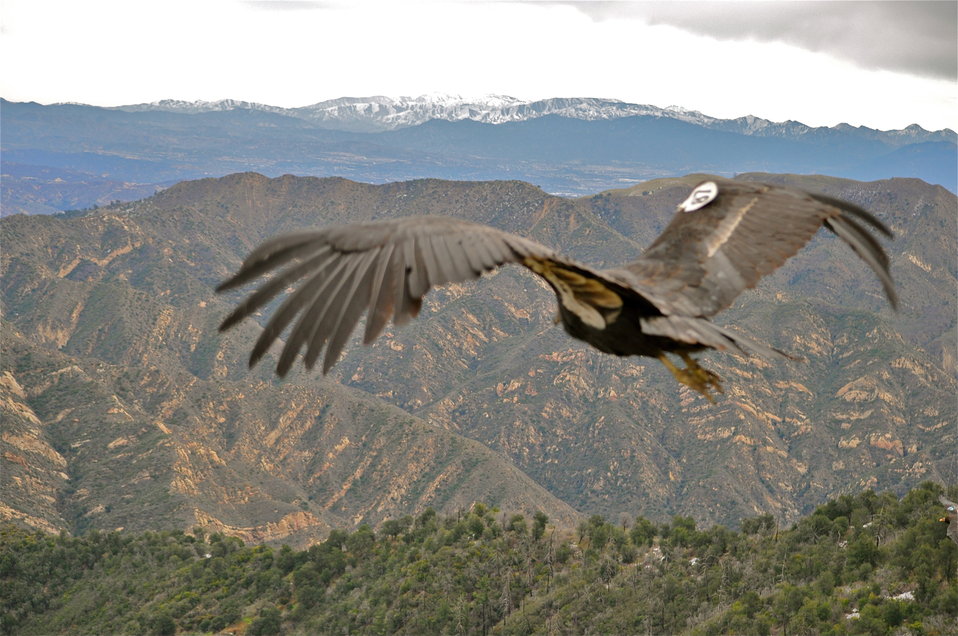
California condor

endangered
Hopper Mountain National Wildlife Refuge, CA